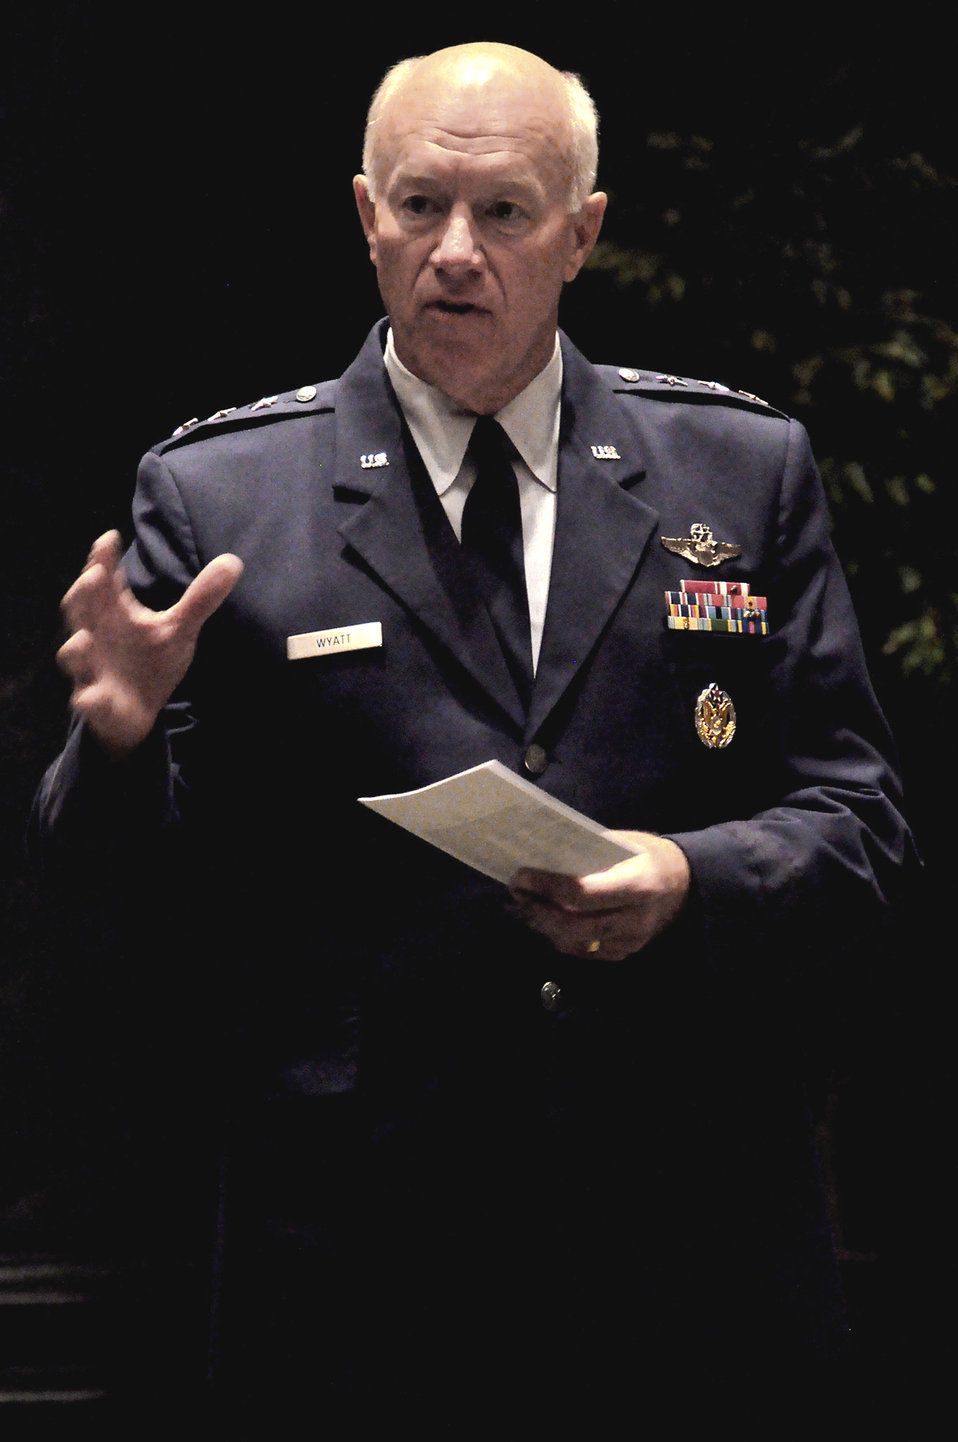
Gen. Wyatt: Associate missions must continue

Lt. Gen. Harry M. Wyatt III speaks to a Minuteman Institute for National Defense Studies audience Oct. 6, 2009, at the National Guard Memorial Building in Washington, D.C. General Wyatt is the director of the Air National Guard.